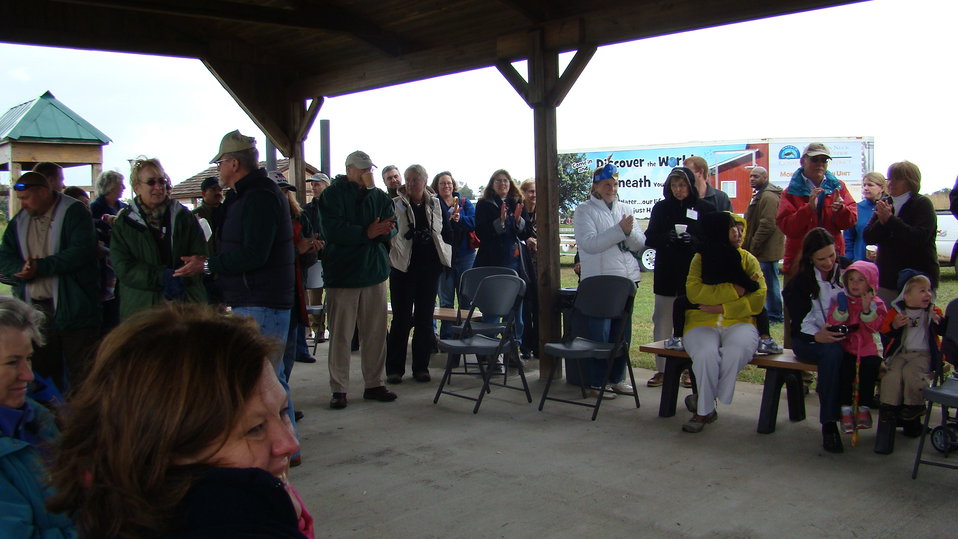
Rappahannock River Valley NWR 15th Anniversary

Refuge Manager Andy Hofmann welcomes attendees to the 'Go Wild!' anniversary celebration.